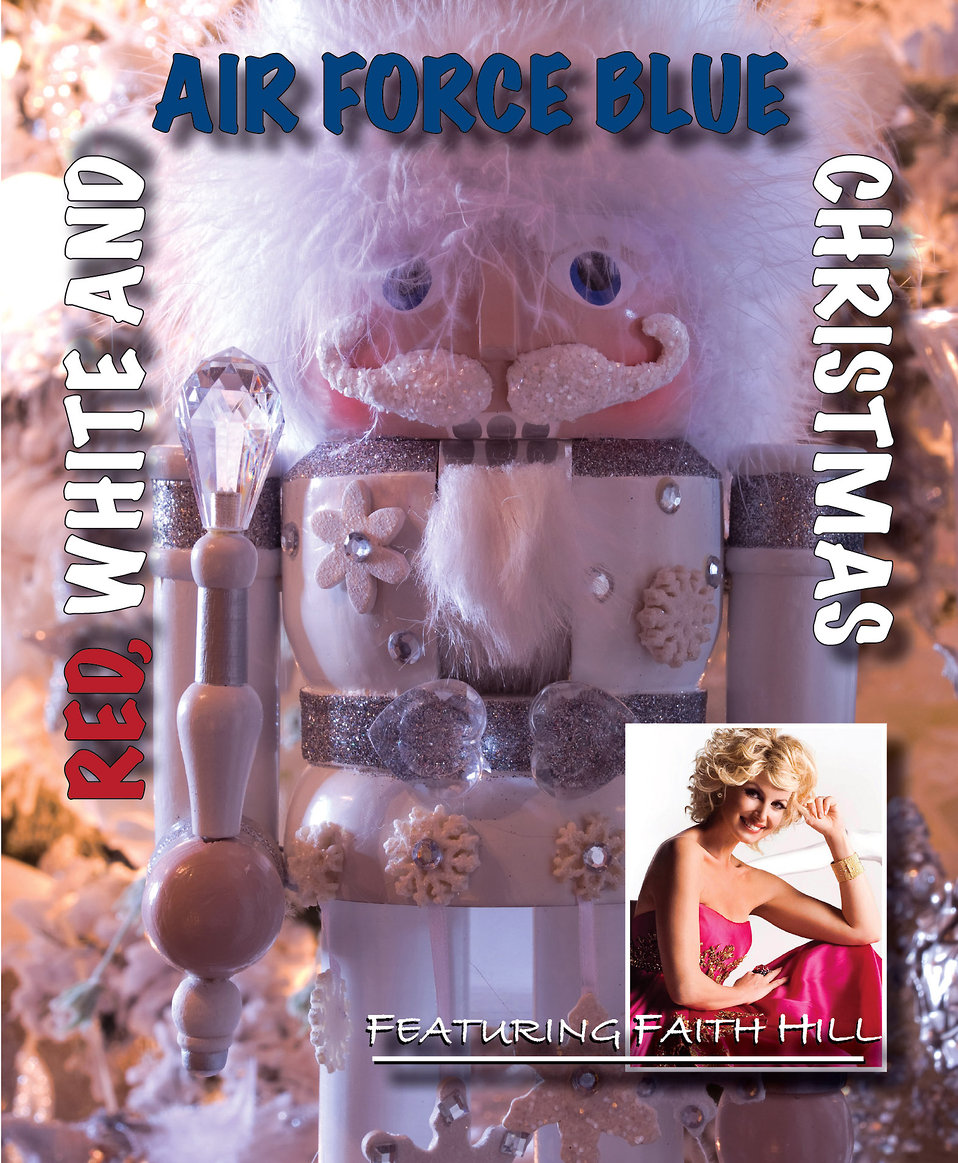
Air Force radio show features Faith Hill

The 2008